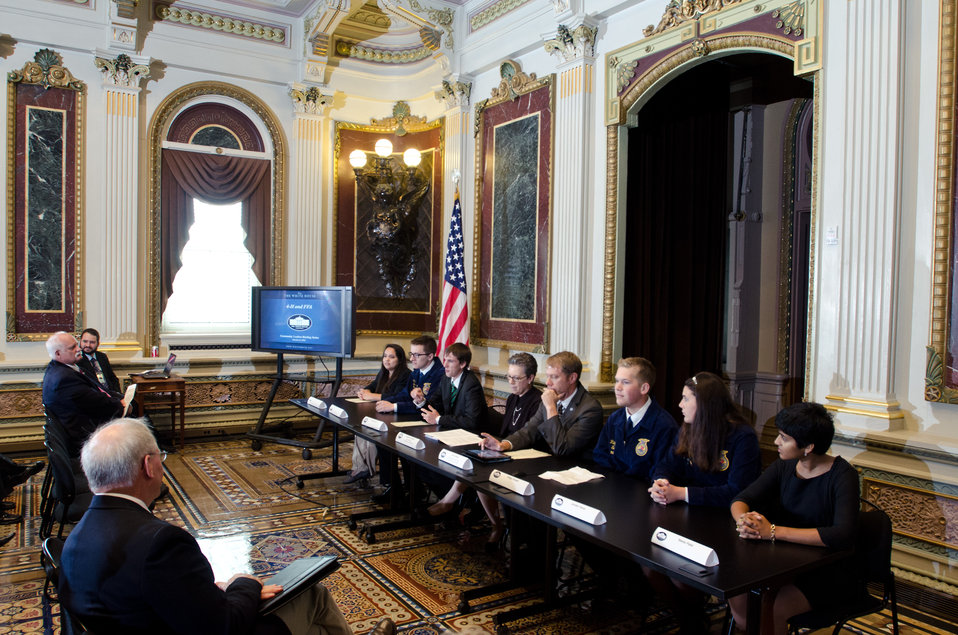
The Youth Champions of Change Panel holds a listening session at the Champions of Change Recognition event in the Indian Treaty Room of the Executive Office Building in Washington, D.C. on Tuesday, Oct. 9, 2012. The Champions of Change program was created to honor ordinary Americans doing great work in their communities. Each week, a different sector is highlighted and groups of Champions, ranging from educators, entrepreneurs and community leaders, are recognized for the work they are doing to serve and strengthen their communities. (Panelist L to R 4-H member Chamonix Mejia, FFA President Jacob Dickey, 4-H member Kaydn Ence, Agriculture Under Secretary for Research, Education and Economics (REE) Catherine Wotecki, Education Deputy Assistant Secretary John White, FFA State Secretary Ridge Howell, FFA member Jordan Paine, and 4-H member Neeta Patel).